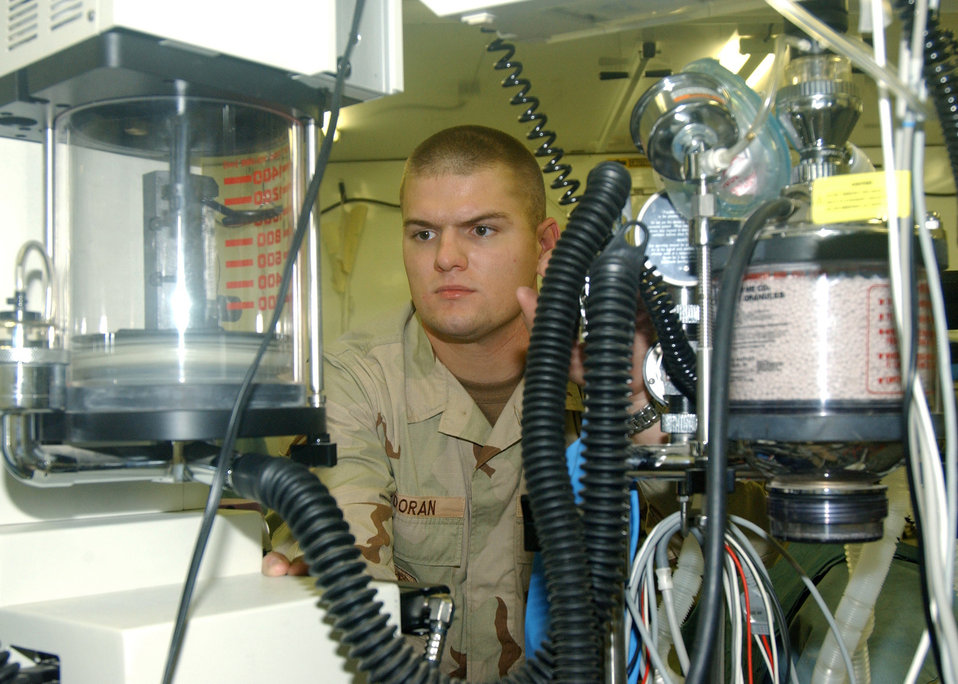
Airman goes green to aid OIF medical mission

KIRKUK AIR BASE, Iraq -- Senior Airman Gary Doran tests the oxygen flow on a mobile anesthesia machine at the 506th Expeditionary Medical Squadron here Sept. 15. Airman Doran is a forward-deployed biomedical equipment technician temporarily assigned to the Army's 354th Medical Logistics Company in Southwest Asia. He travels to repair medical equipment throughout Southwest Asia. Airman Doran is from the 375th Medical Support Squadron at Scott Air Force Base, Ill.